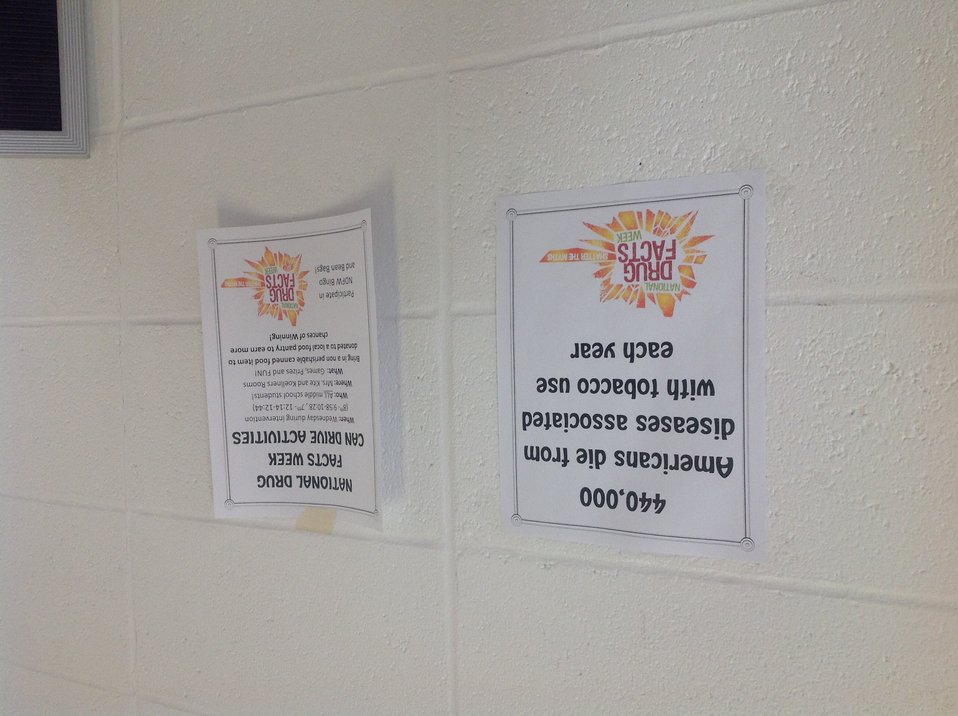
I'm Shattering the Myths Because...

Teenagers from the Van Buren County SAFE Coalition's, Youth Leadership Council (YLC) in Keosauqua, Iowa participate in various events during National Drug Facts Week, 2014.